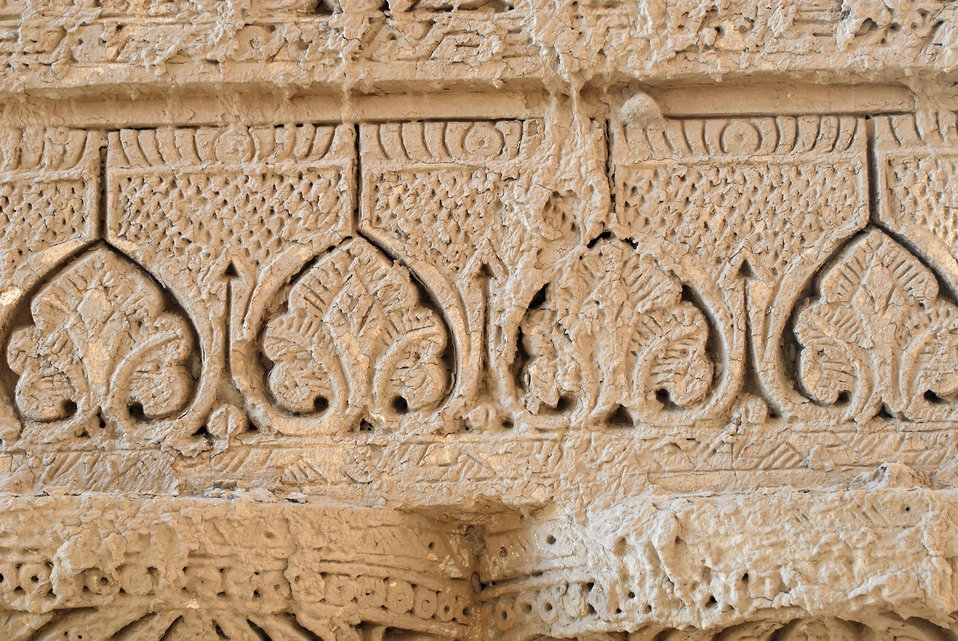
'On the Road' in Balkh Province